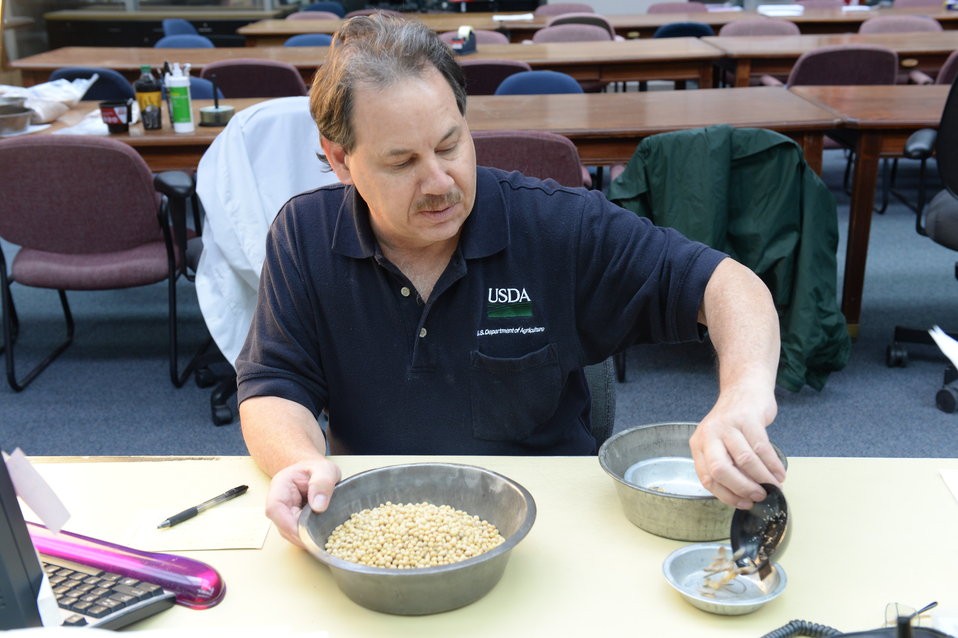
U.S. Department of Agriculture (USDA) Grain Inspection, Packers and Stockyards Administration (GIPSA) Federal Grain Inspection Service (FGIS) employee examines grain samples at the FGIS inspection laboratory in New Orleans, LA on Monday, Nov. 18, 2013.